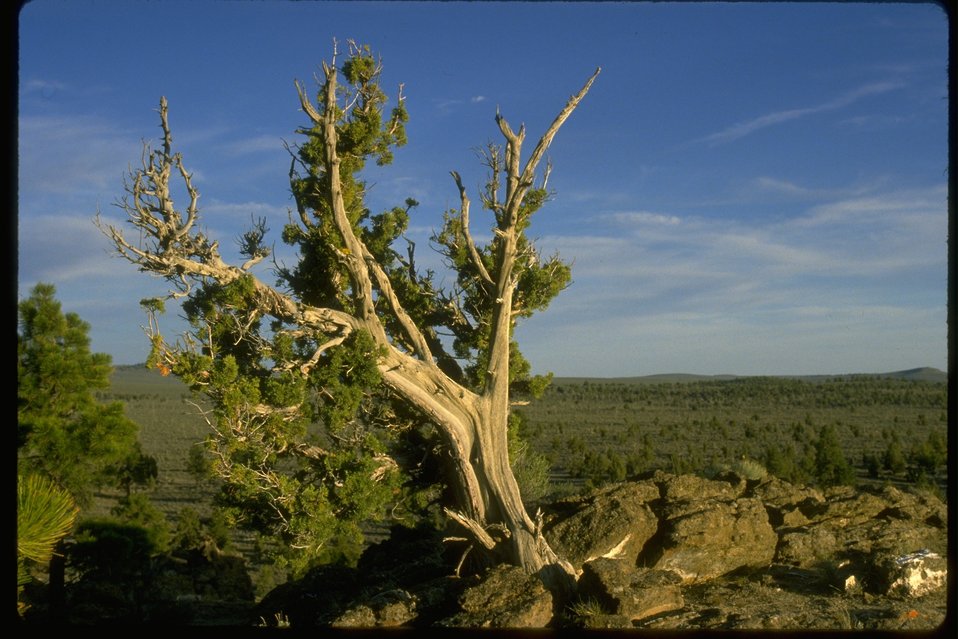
Western Juniper on small ridge.